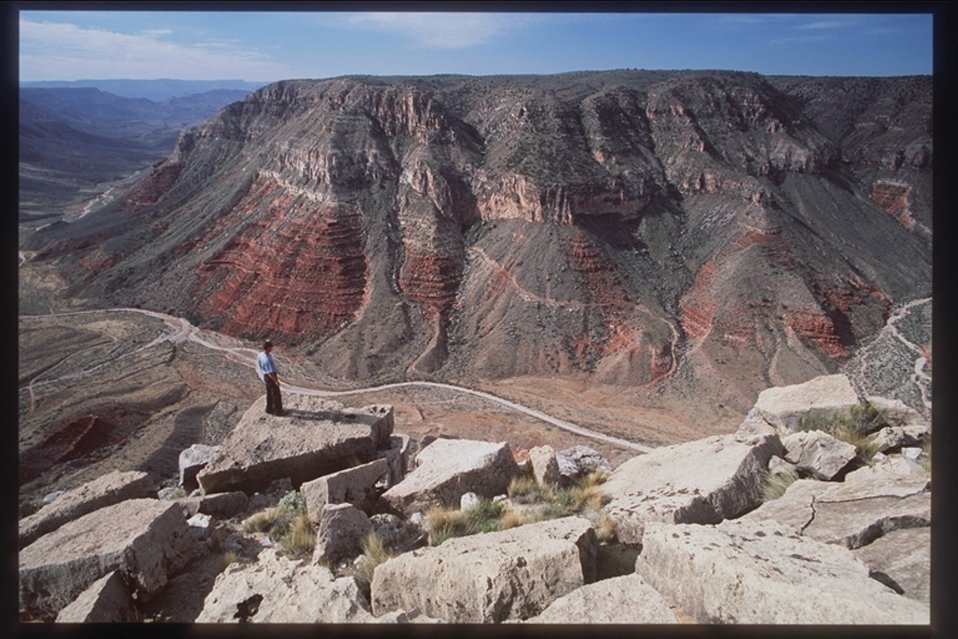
Grand Canyon Parashant National Monument.